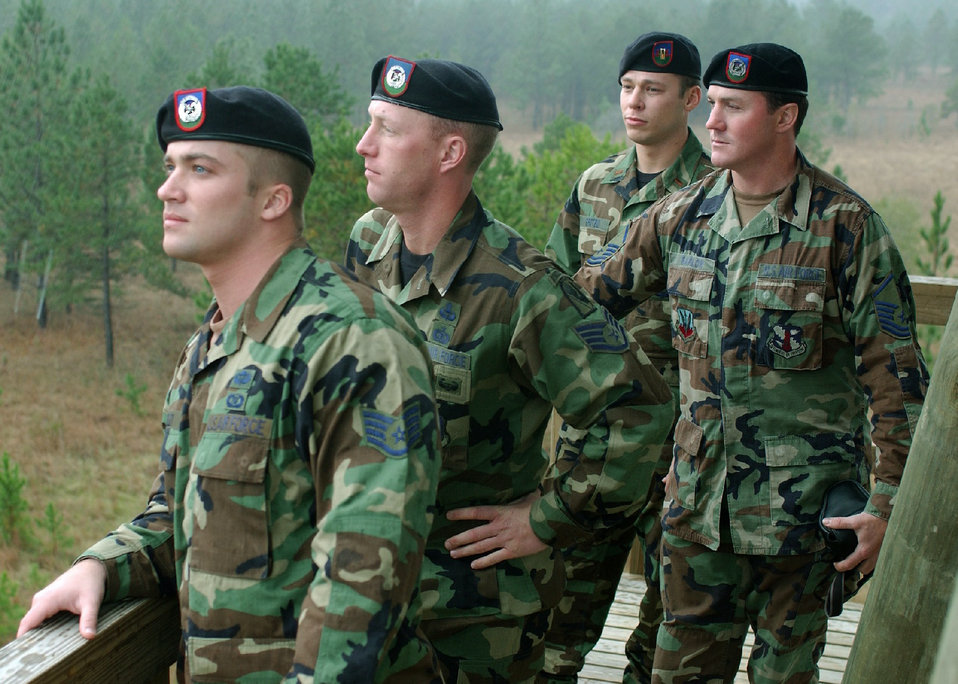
Range control tower dedication honors two Airmen killed in combat

FORT POLK, La. -- (From left) Staff Sgts. Jeb Corley and Jason Meinders, Master Sgt. Chance Barlow and 2nd Lt. Scott Grotbo, stand atop the Losano-Frazier Tower here. The Illinois Air National Guardsmen are tactical air control party Airmen who served with Staff Sgt. Jacob Frazier in the 169th Air Support Operation Squadron. Sergeant Meinders is assigned to Detachment 1, 548th Combat Training Squadron here. The tower was dedicated to Sergeant Frazier and Airman 1st Class Raymond Losano who were the first two tactical controllers killed in action since the inception of the career field during the Korean War.